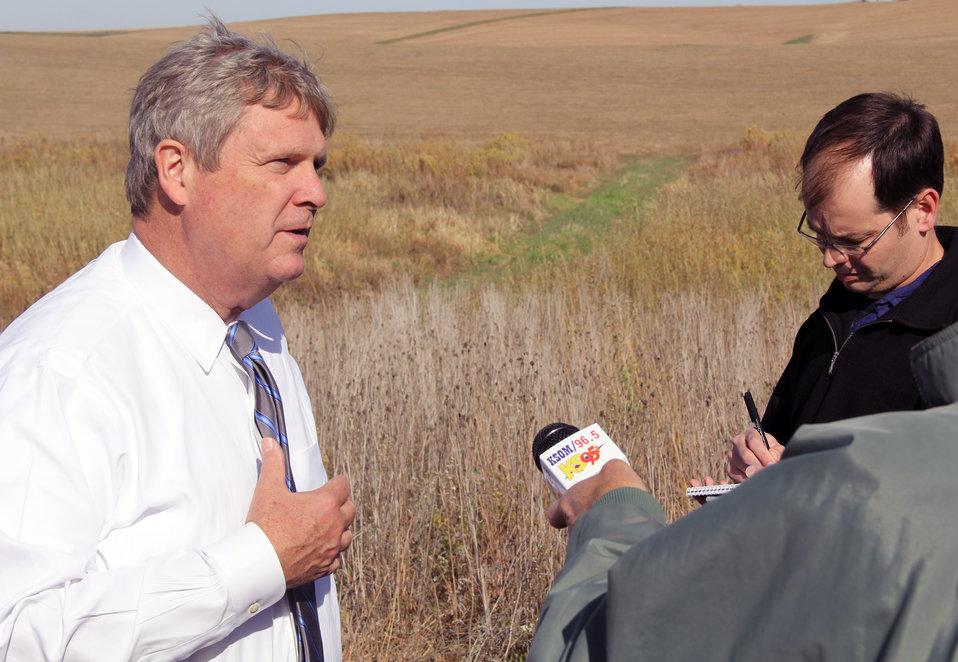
Agriculture Secretary Tom Vilsack visits Gary Matters farm near Lewis, IA on Monday, Oct. 8, 2012. During his visit Secretary Vilsack announced the allocation of 400,000 acres to support conservation and restoration of wildlife and their habitats as part of the U.S. Department of Agriculture’s (USDA) Natural Resources Conservation Service (NRCS) Conservation Reserve Program (CRP). Matters implements a variety of conservation practices on 200 acres of land enrolled in CRP in southwest Iowa. USDA has enrolled more than 12 million acres in CRP, a voluntary program available to agricultural producers to help them use marginal and environmentally sensitive land to bring conservation and economic benefits for their land and communities.